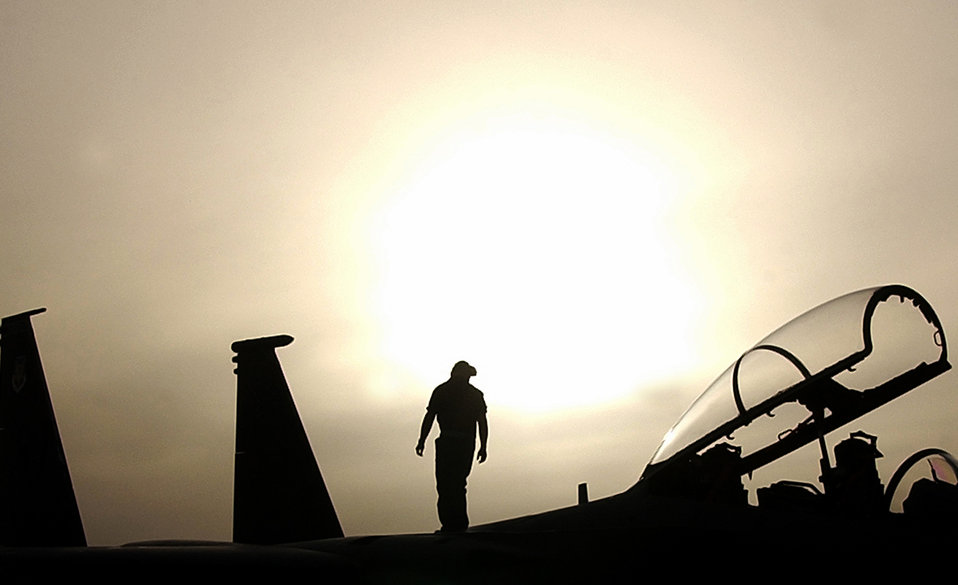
Night mission

OPERATION IRAQI FREEDOM -- A crew chief from the 334th Expeditionary Fighter Squadron, Seymour Johnson Air Force Base, S.C., completes a maintenance check on this F-15E Strike Eagle before a night mission on March 30, 2003.